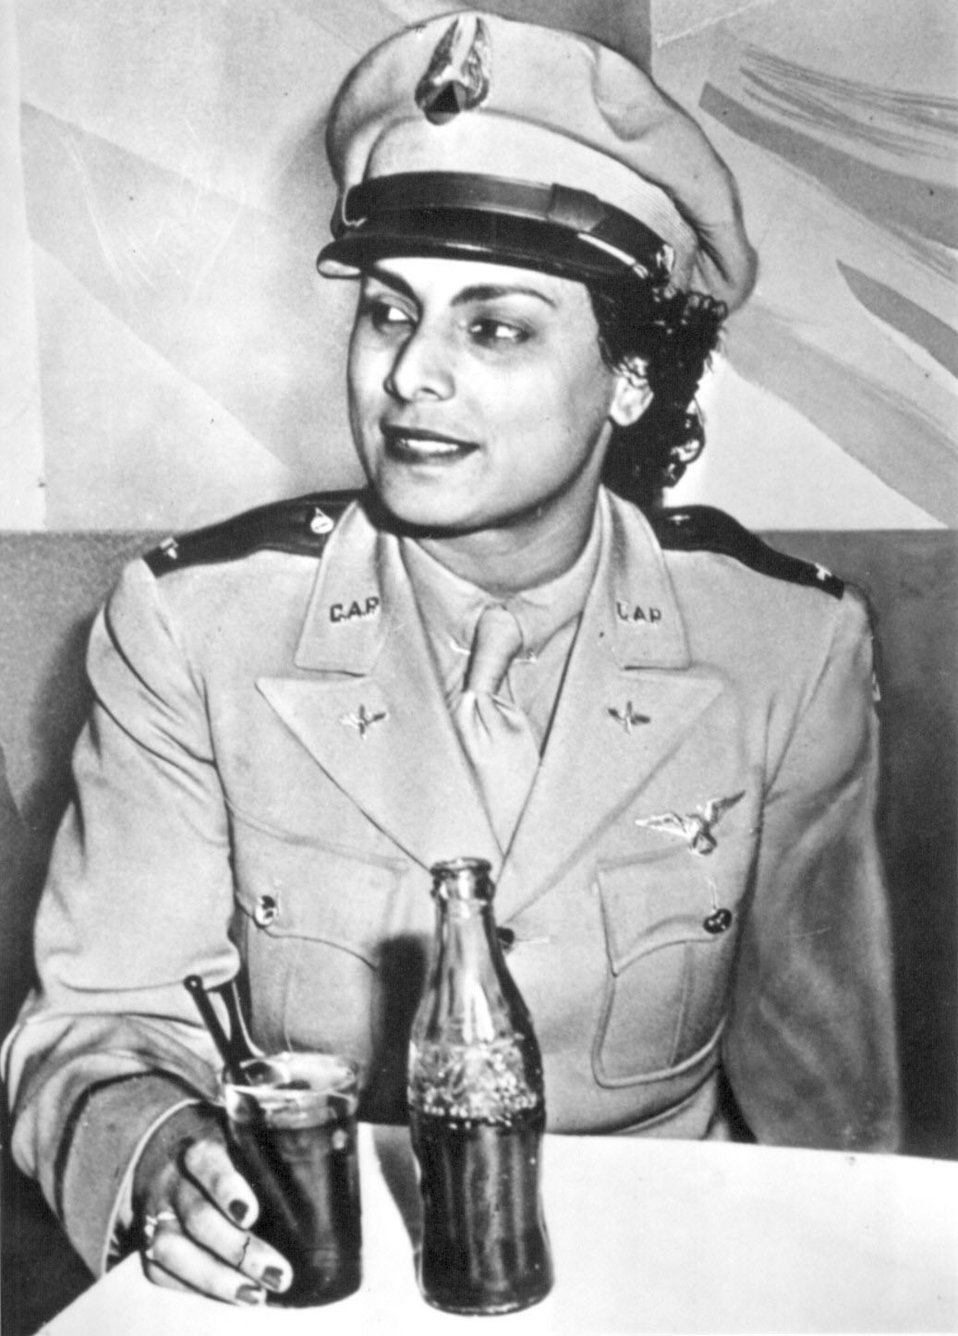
Willa Brown: Helped African-Americans become part of military

Willa Brown was the first African-American woman to make a career of aviation.